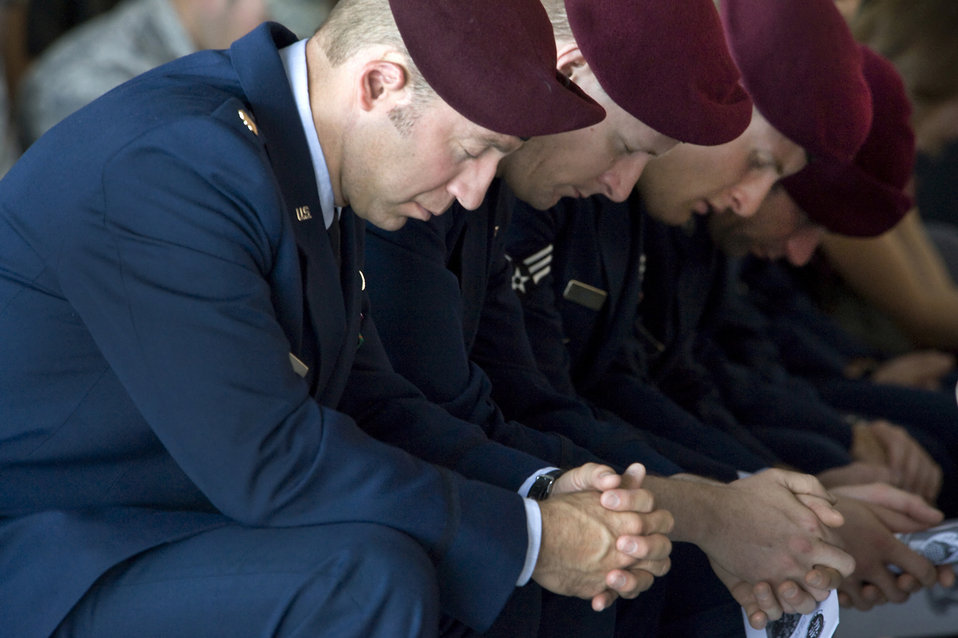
Nellis Airmen honor fallen comrades

Fellow U.S. Air Force pararescuemen pay their final respects to 1st Lt. Joel Gentz and Staff Sgt. David Smith during a memorial ceremony June 18, 2010, at Nellis Air Force Base, Nev. Lieutenant Gentz was a combat rescue officer assigned to the 58th Rescue Squadron and Sergeant Smith was a helicopter flight engineer assigned to the 66th Rescue Squadron.